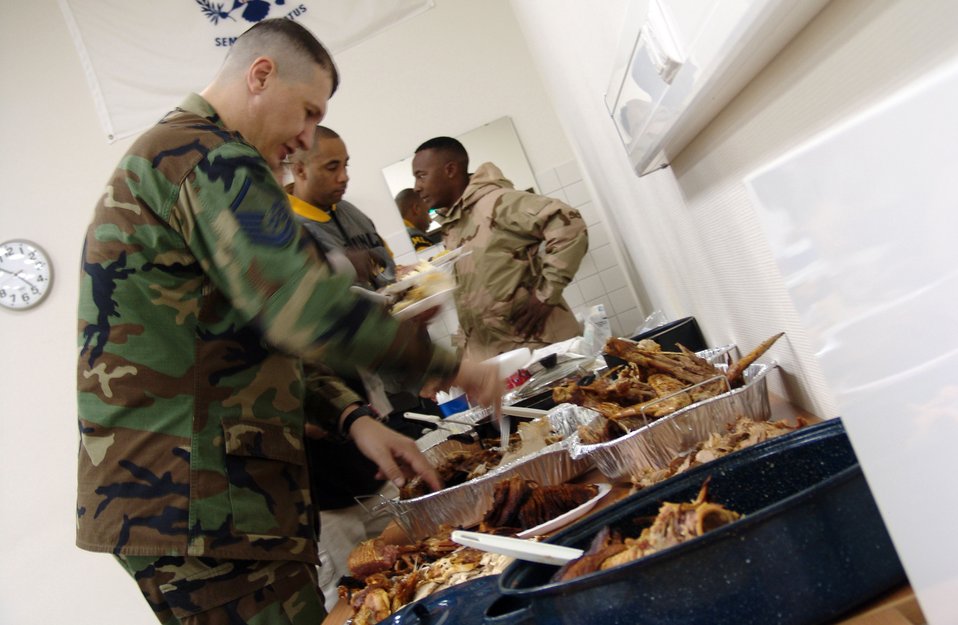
Thanksgiving at CASF

Master Sgt. Carlton Lewis helps himself to some turkey Nov. 23 at a Thanksgiving dinner at the Contingency Air Staging Facility at Ramstein Air Base, Germany. The Germany chapter of The Rough Riders Motorcycle Club provided the meal for the staging facility staff and servicemembers on their way to the United States from deployed locations.